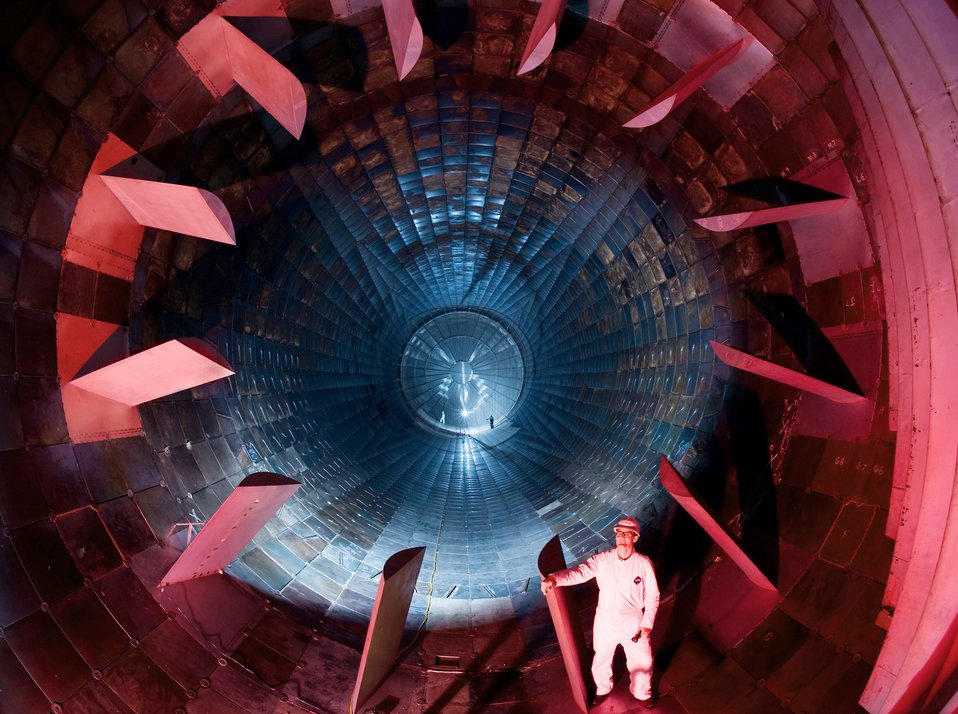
Blow hard

Inside the diffuser section of the16-foot supersonic wind tunnel at Arnold Air Force Base, Tenn., Dr. Richard Roberts checks out the turbine blades during a site visit Oct. 6, 2009. Dr. Roberts is the project manager of the von Karman Gas Dynamics Facility and the Propulsion Wind Tunnel Facility located at Arnold Engineering Development Center on Arnold AFB.